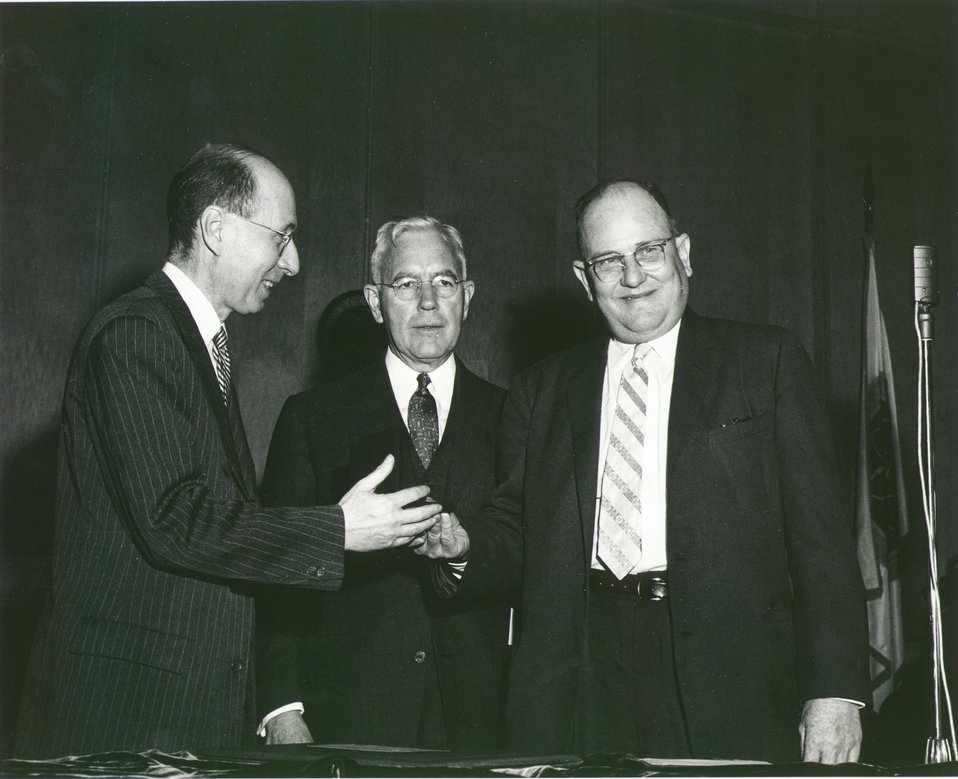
Award Ceremony for Dr. Winger in Washington on Dec. 2, 1958. L to R, Wigner, AEC Chairman John McCone.